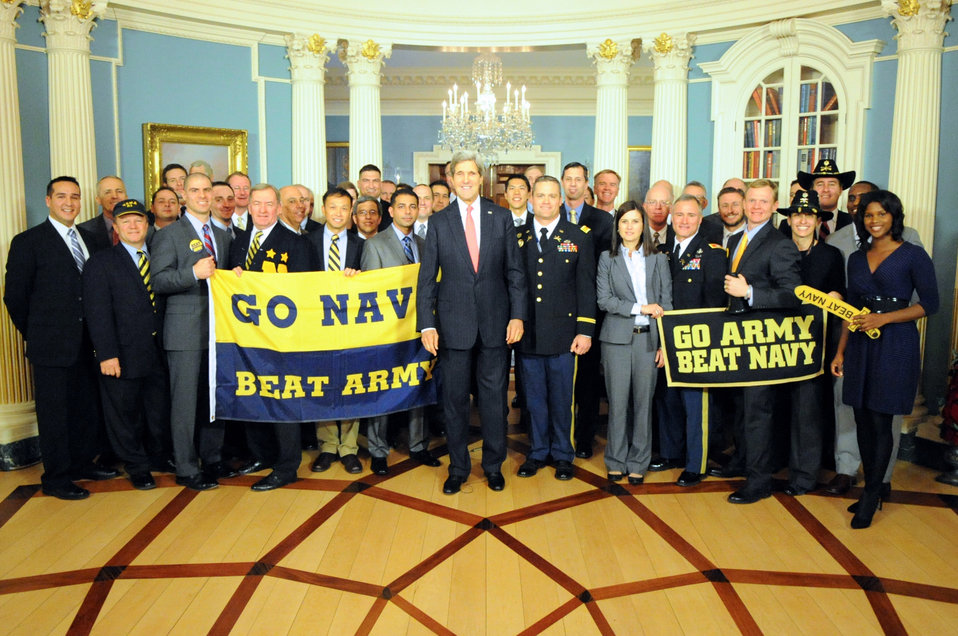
Secretary Kerry Poses for a Photo With Veterans and Military Members

U.S. Secretary of State John Kerry poses fora photo with to some of the 7,000 veterans and military members who work at the Department of State after they joined him in the Treaty Room on December 2, 2013, to record a public service announcement to play during the CBS Sports broadcast of the Army-Navy football game.